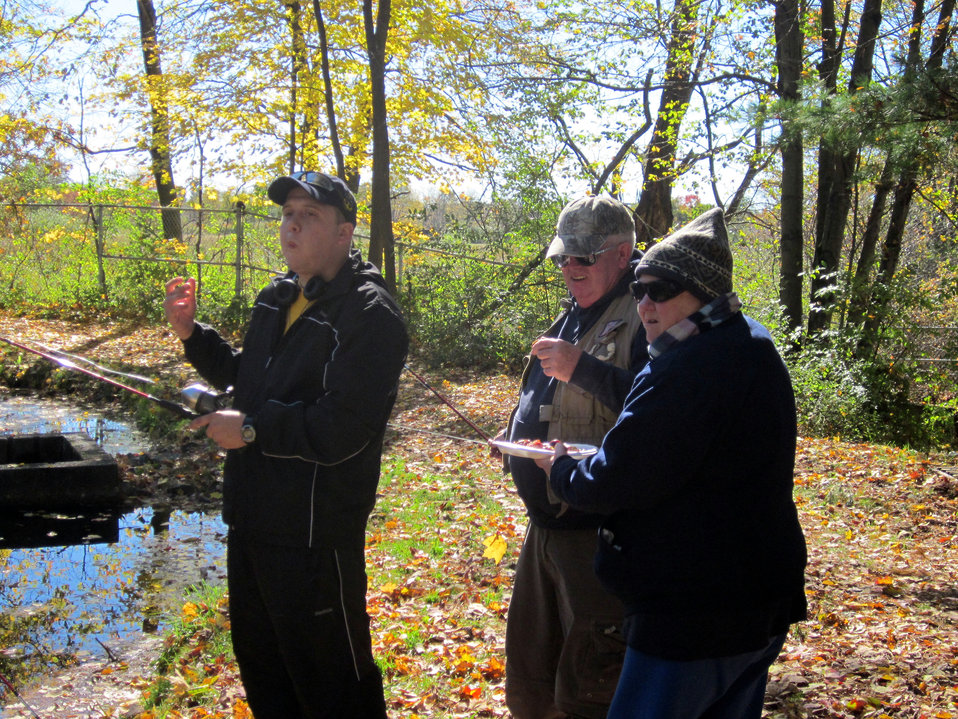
Good food, fishing, and friends

October 13, 2012, Sunderland, MA: Veterans and volunteers enjoy a keilbasa snack at a fishing event at the U.S. Fish and Wildlife Service's Richard Cronin National Salmon Station. Left to right, Kenny DeSalvo, Russ Merrill, and Lauren Corbett.